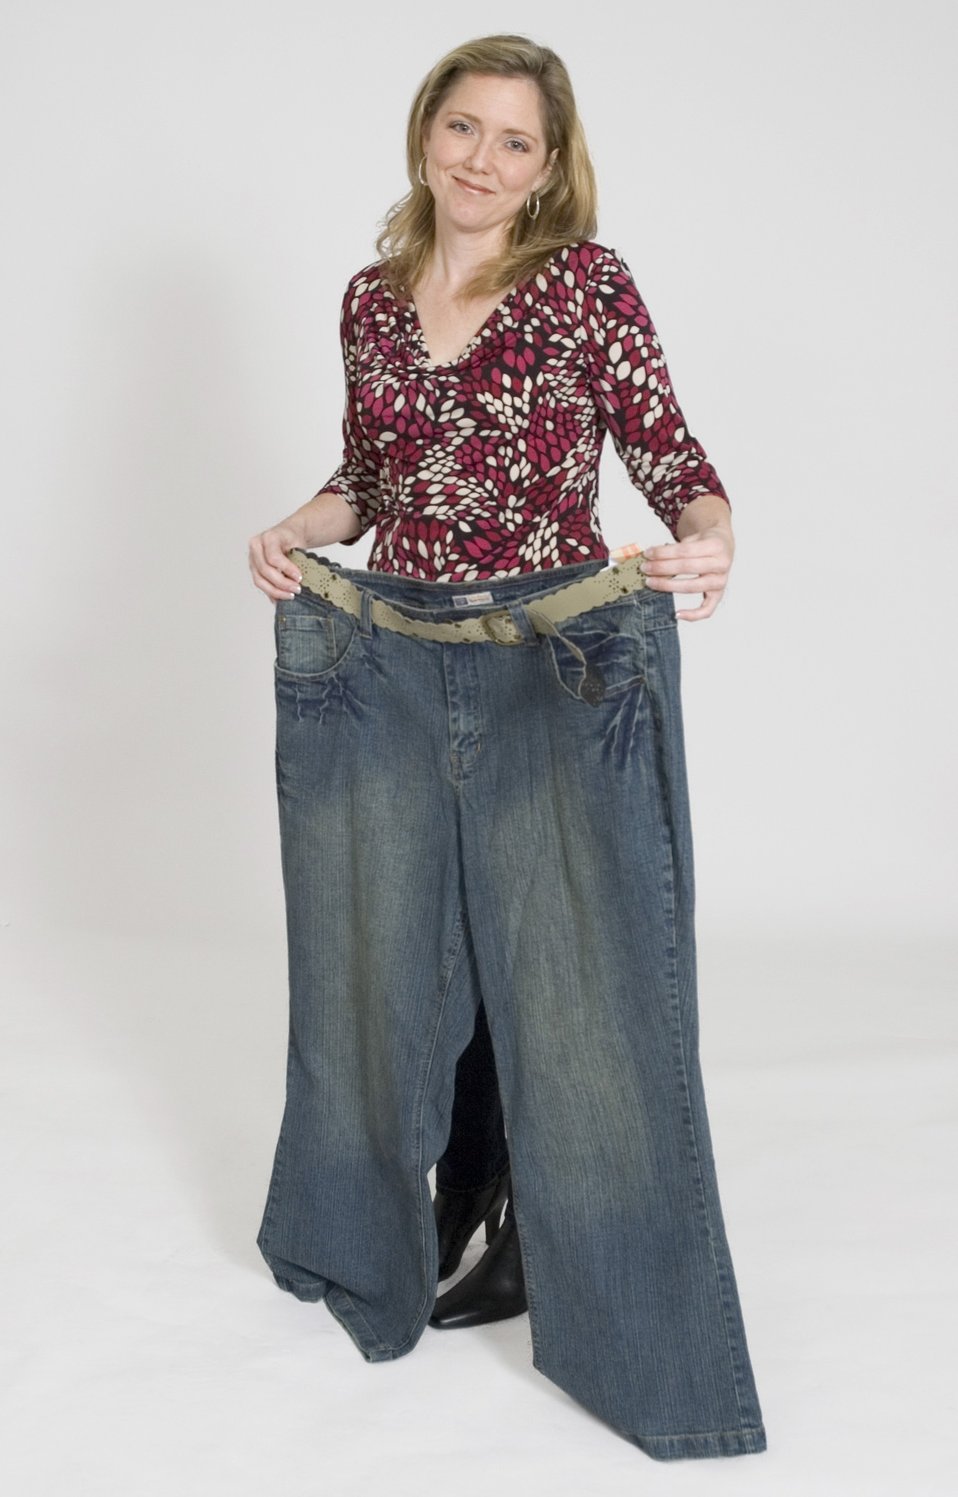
Wellness gives new reality

Turning to the Brooks City-Base, Texas, Health and Wellness Center for help, Diana Harmon, has lost 115 pounds over the past two years through hard work, dedication and education.